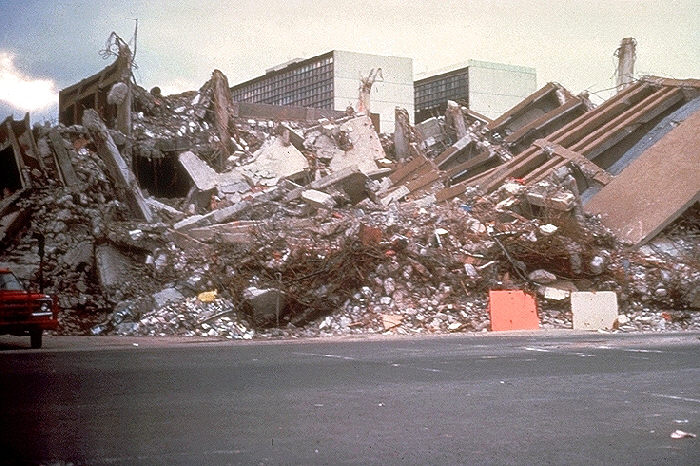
Aftermath of earthquake, Mexico City.